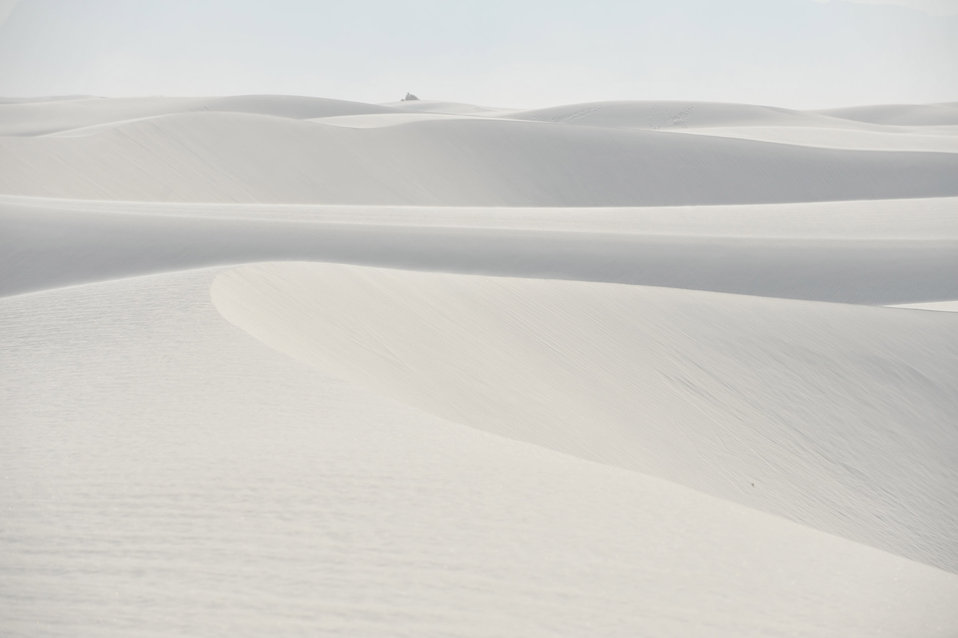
White sands 1

White sands national monument,new mexico.